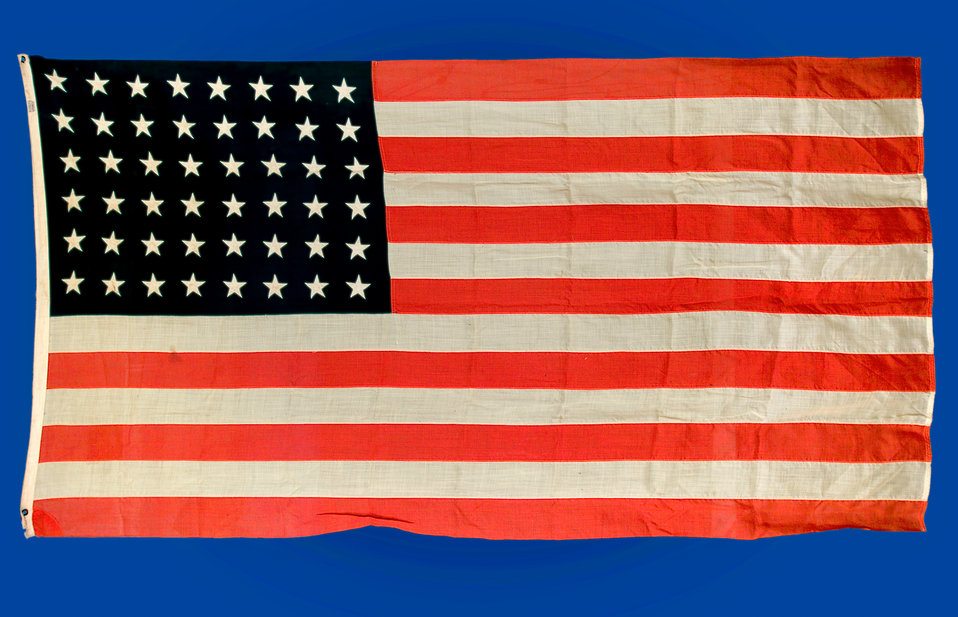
This is the first flag to have been flown over CDC Headquarters in downtown Atlanta, Georgia.